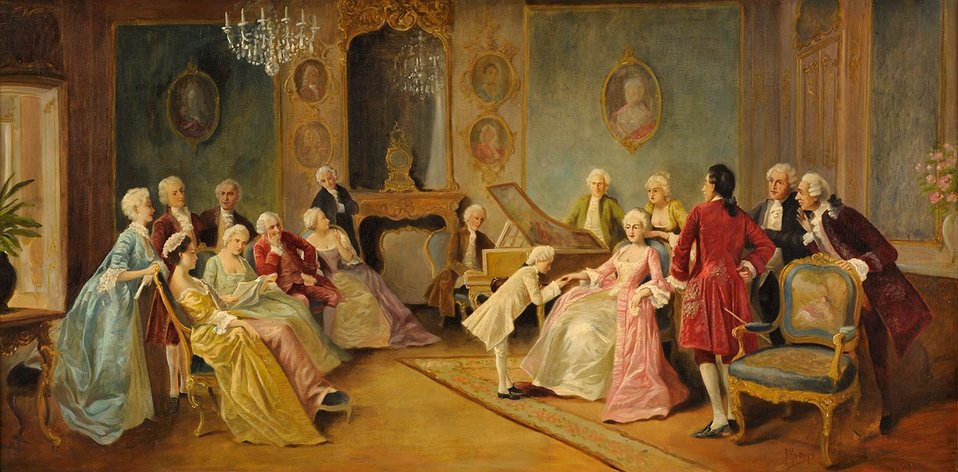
Der junge Mozart. Signiert. ÖL/Lwd., 70 x 140 cm